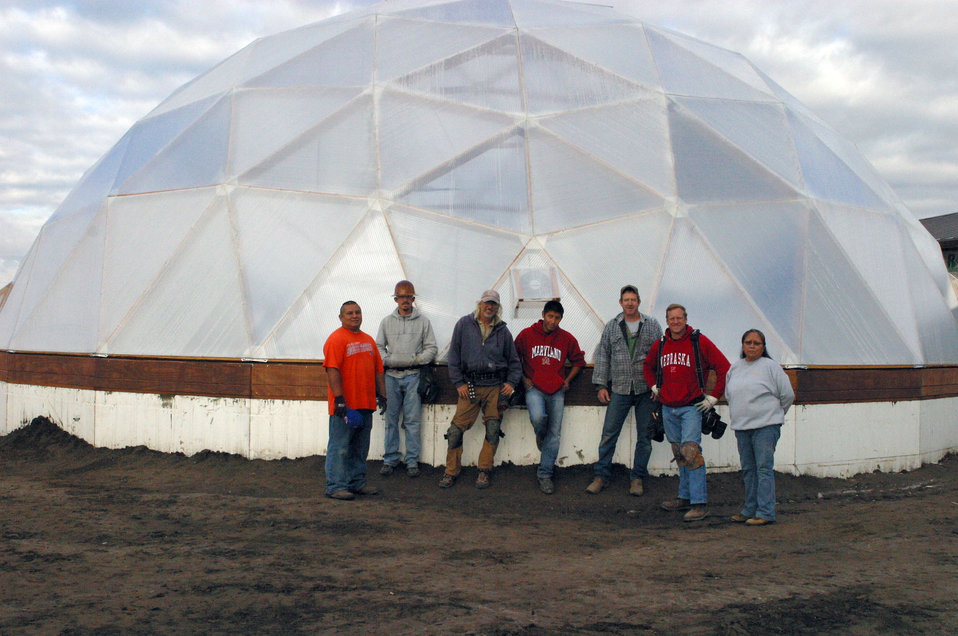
Umatilla Tribes to Grow Native Plants for Hanford

Tribal construction workers stand in front of the hexagonal greenhouse dome structure that will house the seeds for revegetation efforts.